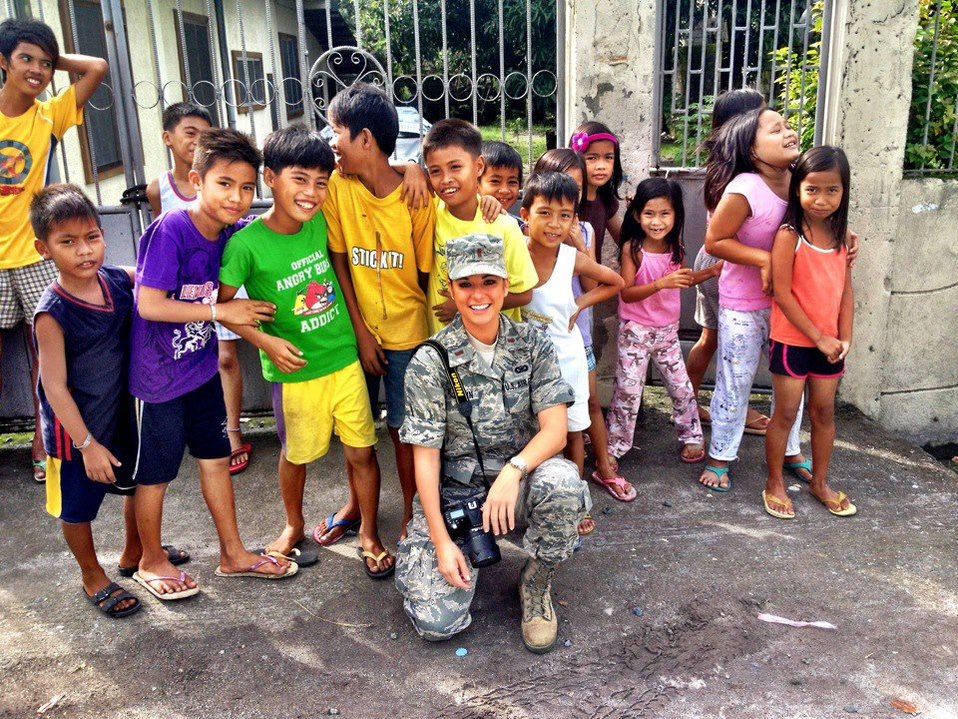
Through Airmen's Eyes: Pacific Unity

Second Lieutenant Sarah Bergstein poses with children from Cacutud Elementary school near Basa, Phillipines. Bergstein was there as part of Pacific Unity 12-6, during which Airmen from Joint Base Pearl Harbor-Hickham joined with their counterparts in the Phillipine air force as well as local contractors to renovate and help build a school.